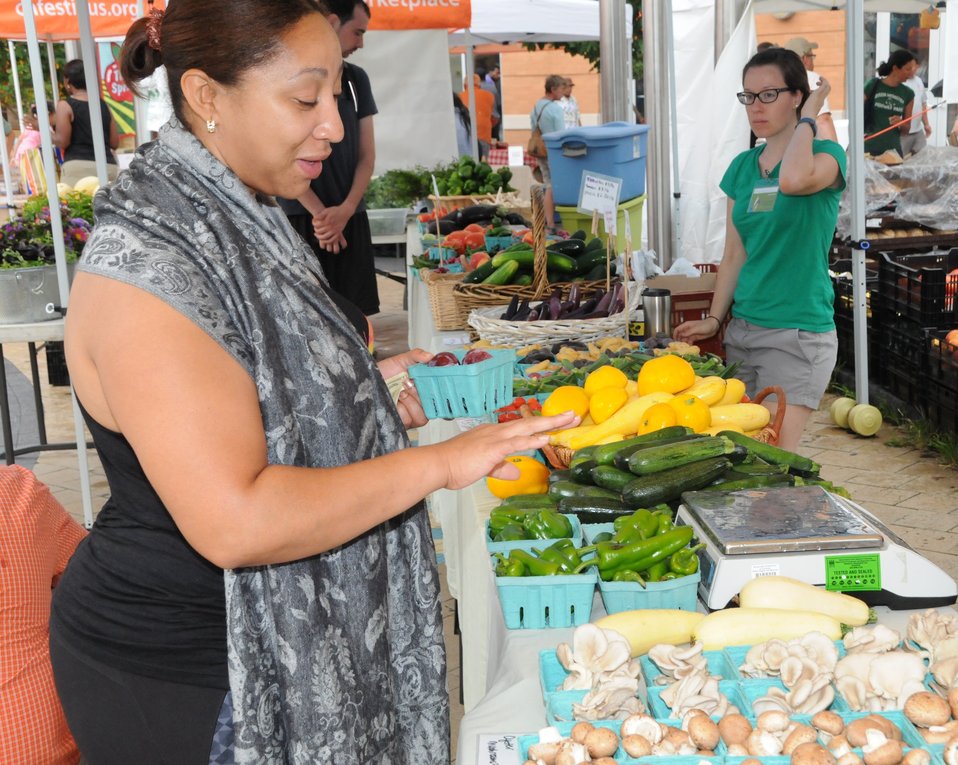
Customer Choosing Mushrooms and Oysters

Mushroom shopping at the Columbia Heights Community Marketplace.